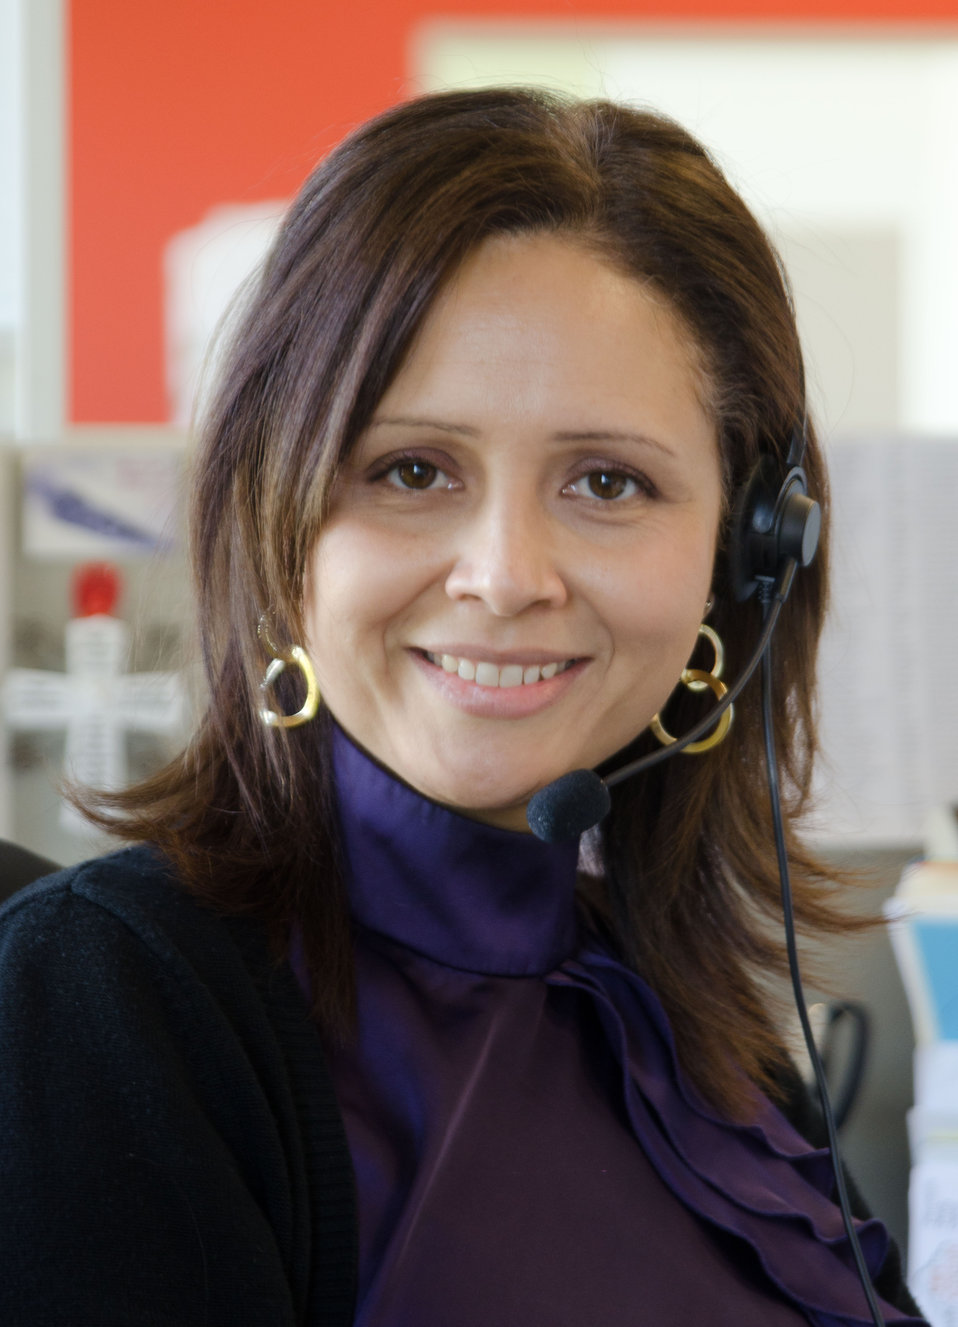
A person in need calling the San Antonio Food Bank (SAFB) on Monday, October 31, 2011 would have reached Help Center Representative Gloria Angel or one of 29 others in the Client Services department at the SAFB headquarters facility in San Antonio, TX. San Antonio Food Bank is a non-profit organization that primarily serves as a clearinghouse by receiving and storing truckloads of donated food, produce, and other grocery. SAFB distribute these items to over 500 service agencies that help people in need. They also provide assistance in the application for federal benefits, and host educational and capacity building programs to eligible persons; some of which are provided by the United States Department of Agriculture. It starts with a call to the Client Services department who handle 5,000 – 6,000 calls each month and serves 16 counties in Southwest Texas. SAFB states, “Nearly one out of every four children and one out of every five adults in Southwest Texas lives in poverty and has difficulty meeting basic nutritional needs.” “We couldn’t do what we do without our partnership with USDA’” said President and CEO Eric Cooper. He continues, “We are privileged in partnering (with the USDA) to feeding kids, through the summer, with the Summer Food Service Program, and throughout the year, with the Child and Adult Care Feeding Program (CACFP). Then in our approach to feeding seniors, we partner with USDA in the Commodities Supplemental Food Program (CSFP), and the Senior Farmer’s Market (Nutrition) Program. And then work to bring all our (needy) parties together with our Supplemental Nutrition Assistance Program (SNAP) Outreach. You know, once families have access to food we believe it is important to educate them. Through the support of the SNAP-Education Program we are able to educate them during their time of need. With this comprehensive approach we are really able to get the right food, at the right amount, at the right time, to needy families throughout our community – which allows us to feed the fifty-eight thousand we do, each week.” USDA photo by Lance Cheung
www.fns.usda.gov/fns/
www.fns.usda.gov/snap/ www.fns.usda.gov/fdd/programs/tefap/